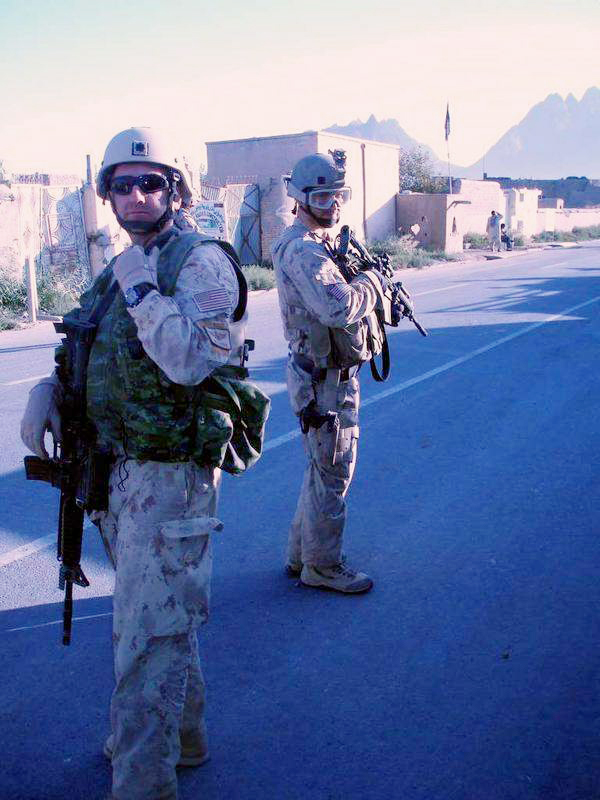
Air Force officials remain vigilant in PTSD treatment

Lt. Col. Greg Harbin (left) patrols a village in Afghanistan while embedded with Canadian forces near Kandahar, Afghanistan. A bullet struck from behind but did not penetrate Colonel Harbin's body armor 10 minutes after the photo was taken. Trained and equipped with remotely operated video enhanced receiver or ROVER, Air Force ground combat teams work with assigned ground units. ROVERs heighten the effectiveness of and mitigate collateral damage by allowing ground troops to